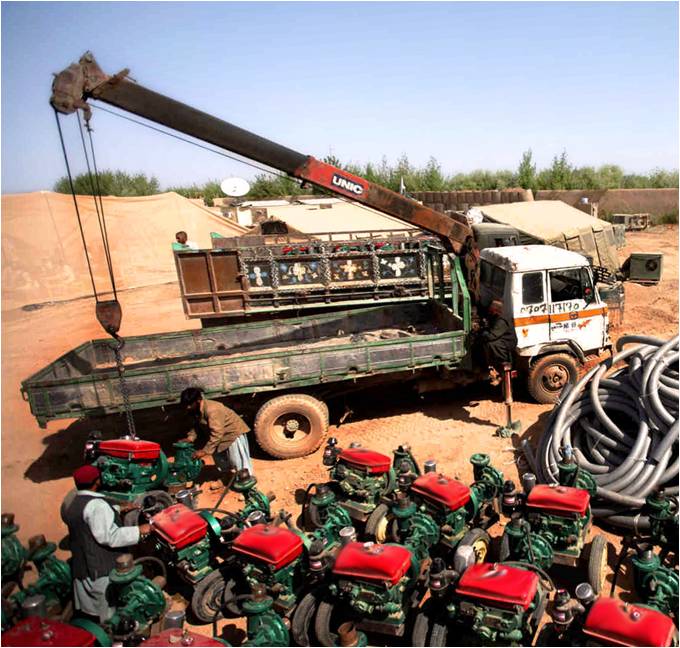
Water Pumps Arrive in Marjah

USAID, through its Afghanistan Vouchers for Increased Produc-tion in Agriculture Plus (AVIPA Plus) program, has delivered the first batch of 4,000 irrigation pumps to Marjah District in Hel-mand Province, Afghanistan. The pumps will benefit rural farm families by bringing much needed water to fields that will soon see a distribution of red onion, spinach, turnip, radish, carrot, and cauliflower seeds, and fertilizers.
The AVIPA Plus pumps, maintenance supplies, and tubes are the first agricultural aid inputs to be taken out to Marjah District, which continues to be plagued by insurgent-initiated violence.
The voucher pumps, combined with the vegetable seed and fertilizer, will help wean the population off the production of poppy, a crop that helps fund the insurgency.
Over the coming months, the delivery of AVIPA Plus agricul-tural inputs and small grants, as well as the initiation of agricul-tural training and quick impact cash for work programs, will gradually help to turn the tide in Marjah.